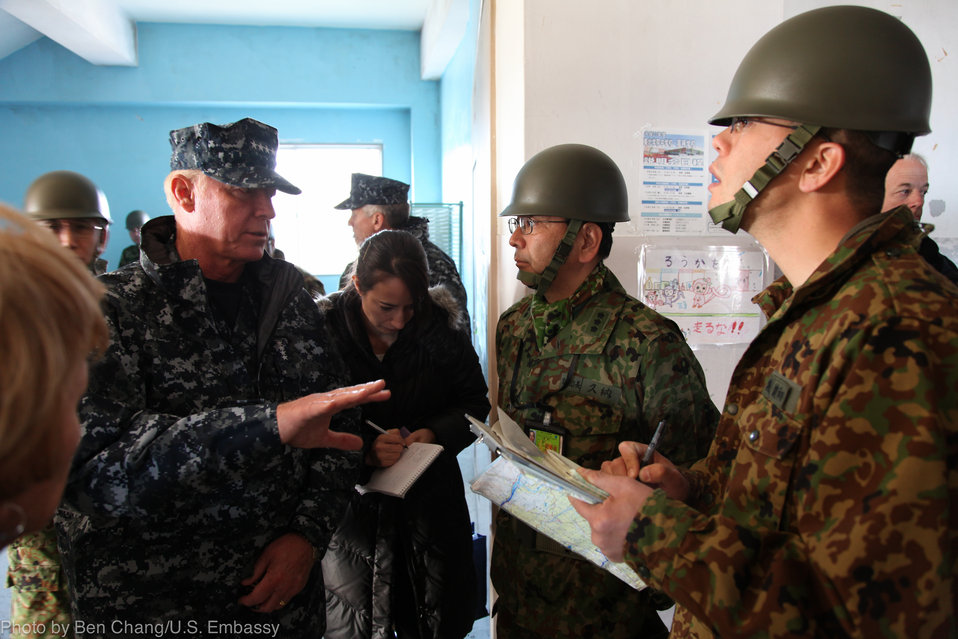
Admiral Willard Discusses Relief Efforts with Japan Self Defense Forces Leaders

U.S. Pacific Command (PACOM) Commander Admiral Robert Willard discusses relief efforts with Japan Self Defense Forces leaders in Sendai, Japan, on March 23, 2011.